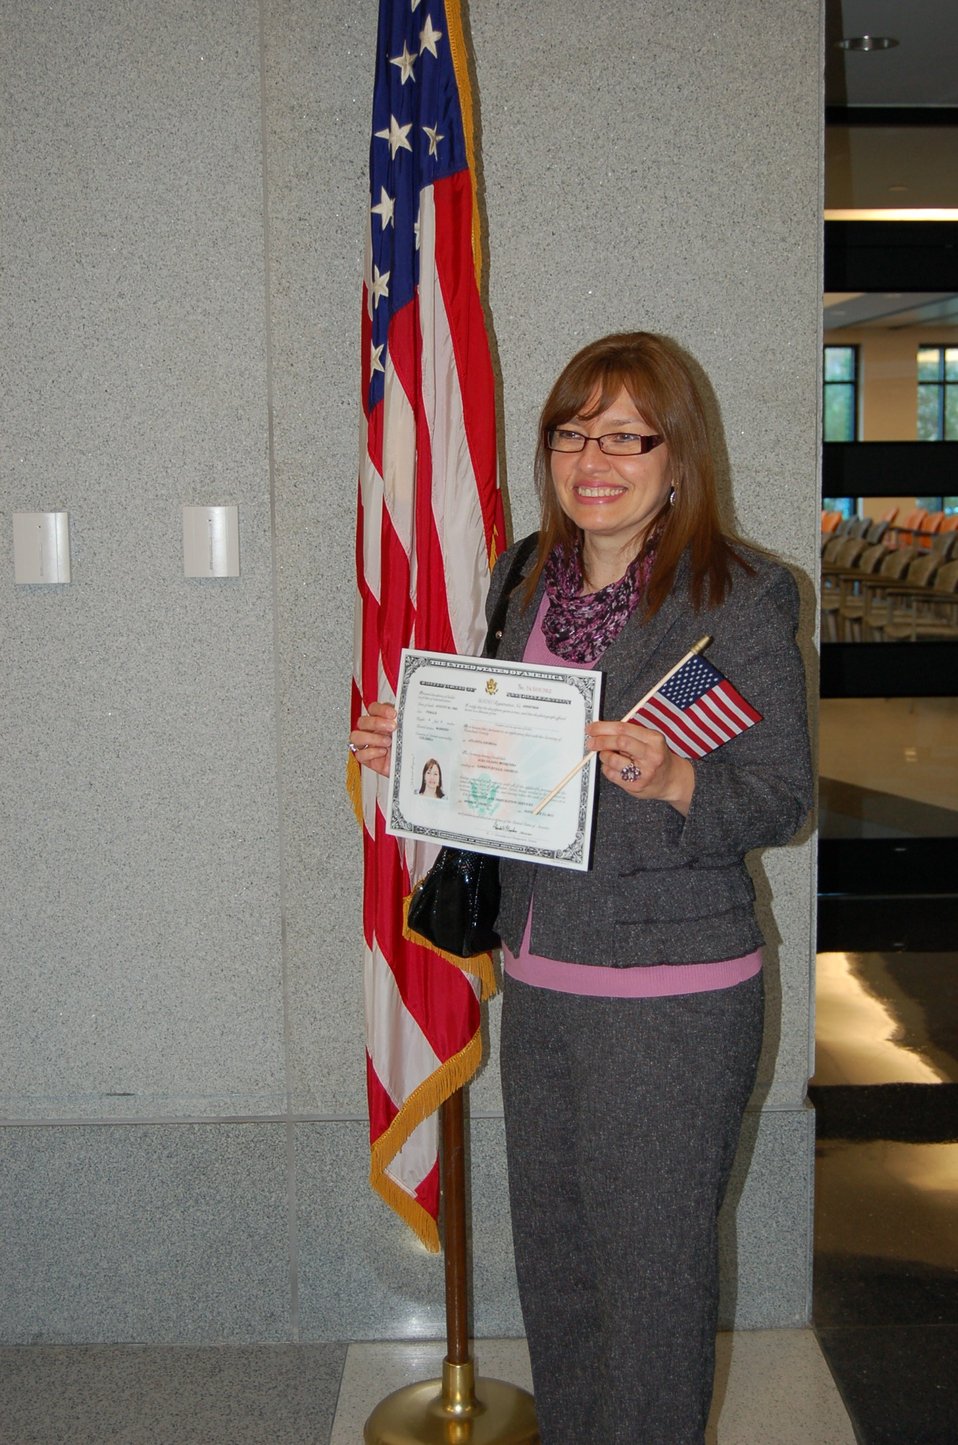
New Citizens